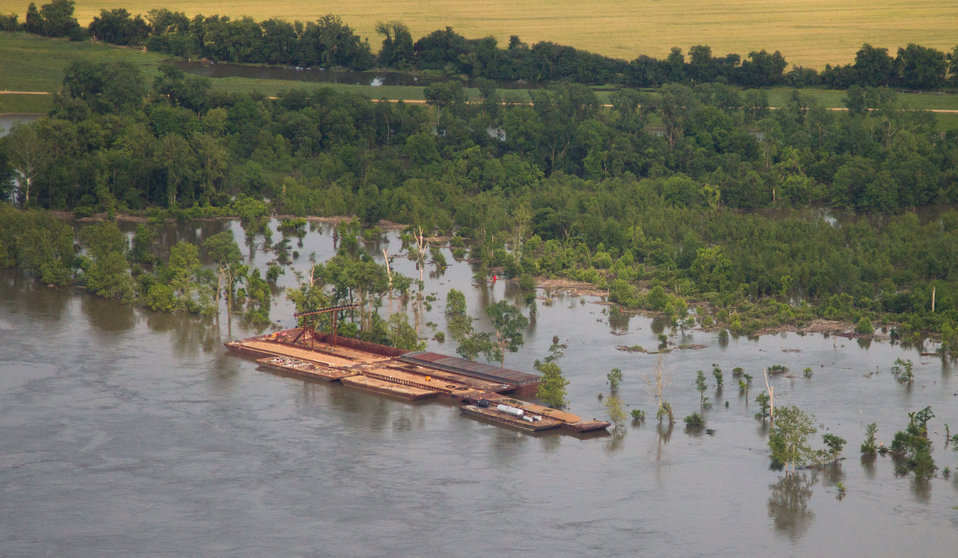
Aerial view of Mississippi River flood of farms, wilderness, and populated areas, on Thursday, May 19, 2011. from the MS side. Aerial platform was a UH-60 Blackhawk commanded by Col. Kennedy and his flight crew from the Army Aviation Support Facility #1 at Hawkins Field in Jackson, MS.